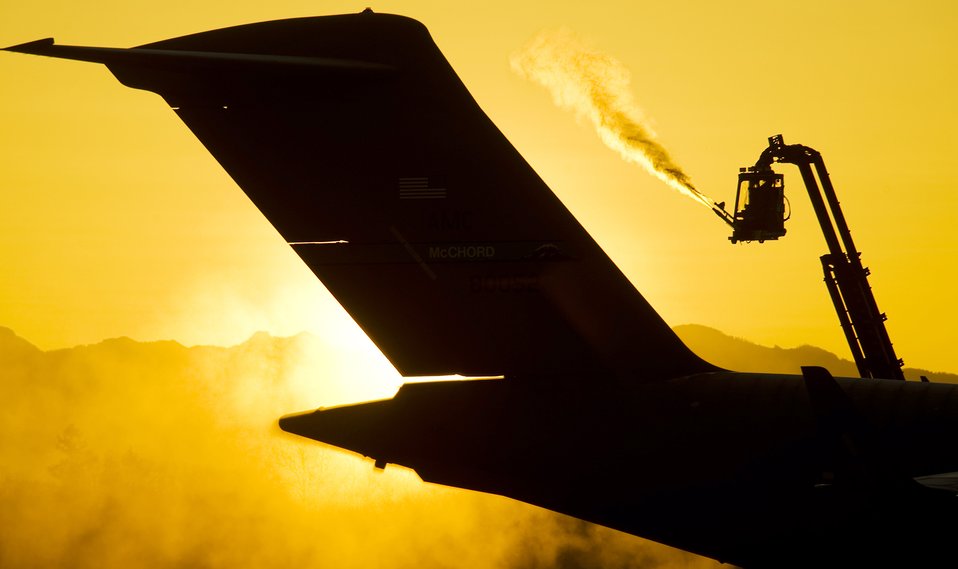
Mission possible

An Airman applies deicing fluid to the tail of a C-17 Globemaster III on the flightline at McChord Field, Wash., Feb 22, 2010, in preparation for a mission. Deicing provides protection against ice and snow buildup on critical control surfaces, engine inlets and sensors on the aircraft before launch. The Airman is assigned to the 62nd Aircraft Maintenance Squadron at Joint Base Lewis-McChord.